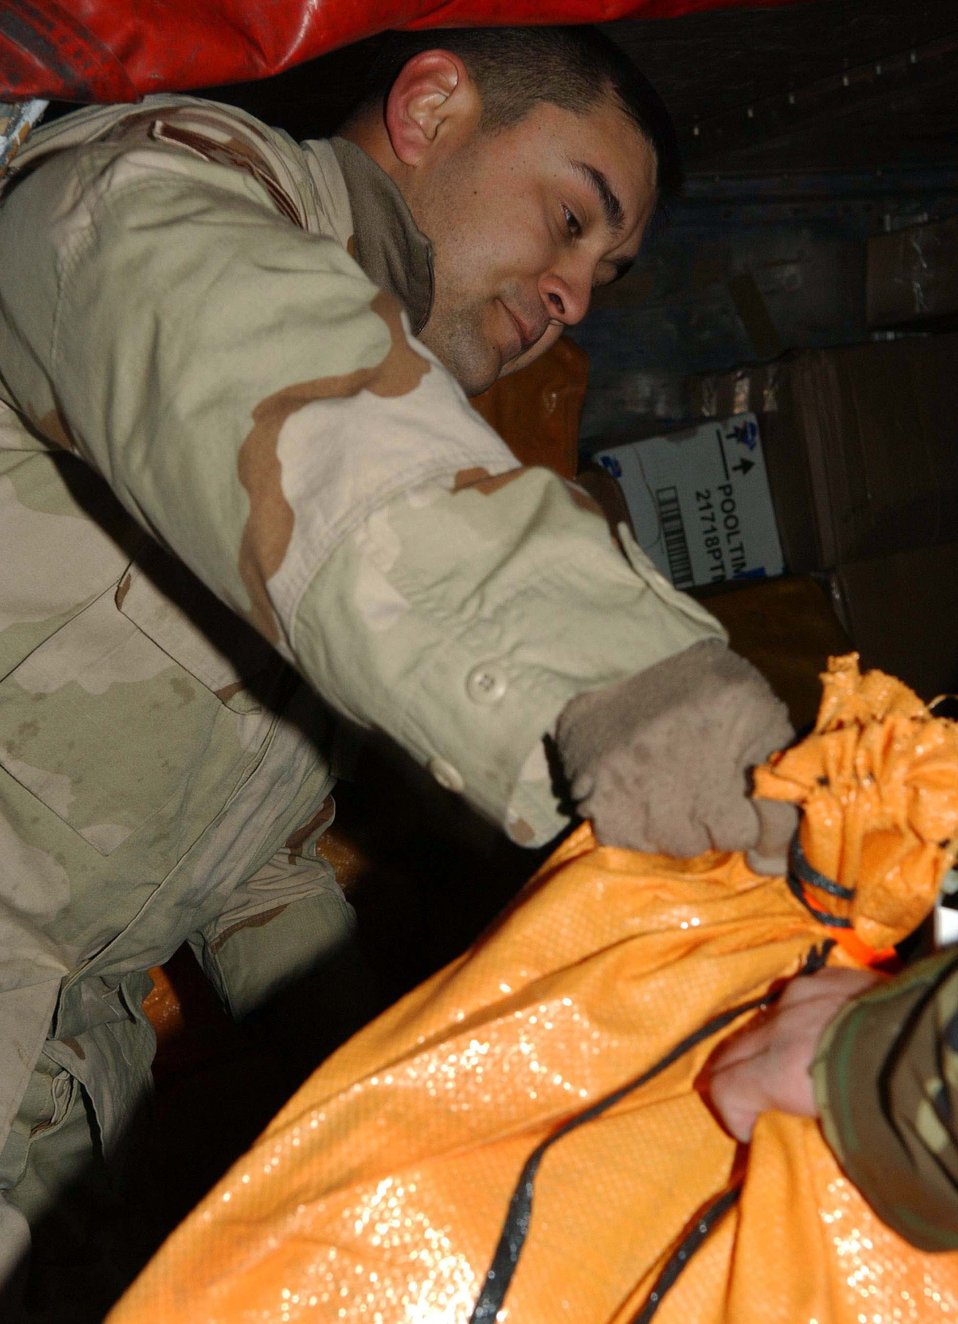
Bagram mail team delivers

BAGRAM AIR BASE, Afghanistan -- Staff Sgt. Rick Kandrach unloads bags of letters and packages from a mail container here. Postal workers process between 15,000 and 50,000 pounds of mail daily. Sergeant Kandrach is an administrator assigned to the 455th Expeditionary Operations Group.